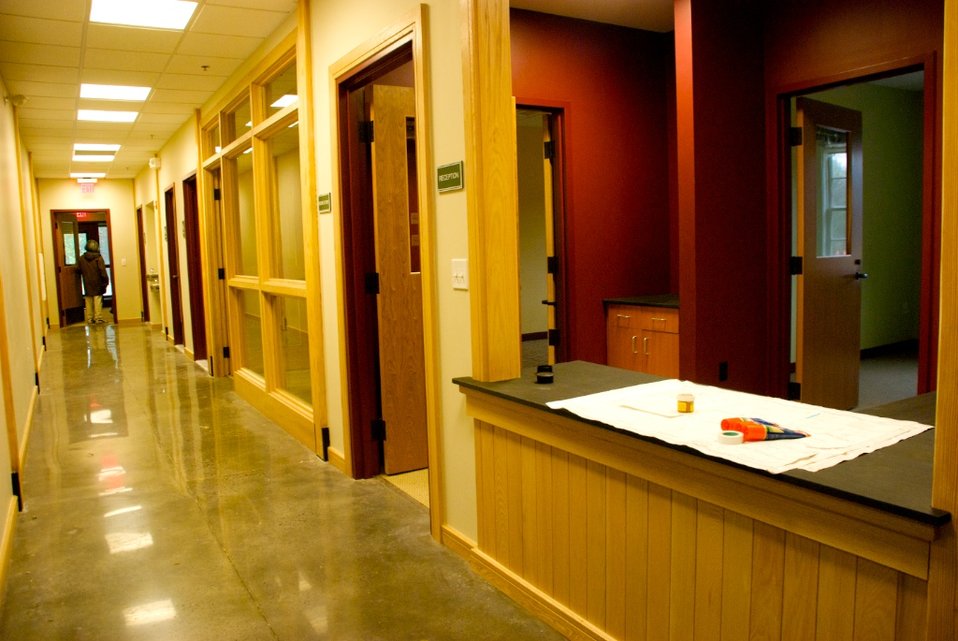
Assabet River NWR Visitor Center

In 2010, the U.S. Fish and Wildlife Service will open the doors to a new energy efficient administrative and visitor center for the Eastern Massachusetts National Wildlife Refuge Complex at the Assabet River refuge in Sudbury, Mass.

American Recovery and Reinvestment Act funding will support the fabrication and installation of exhibits that will enhance visitors' experience with information about the refuge's wildlife, habitats, and recreational opportunities.